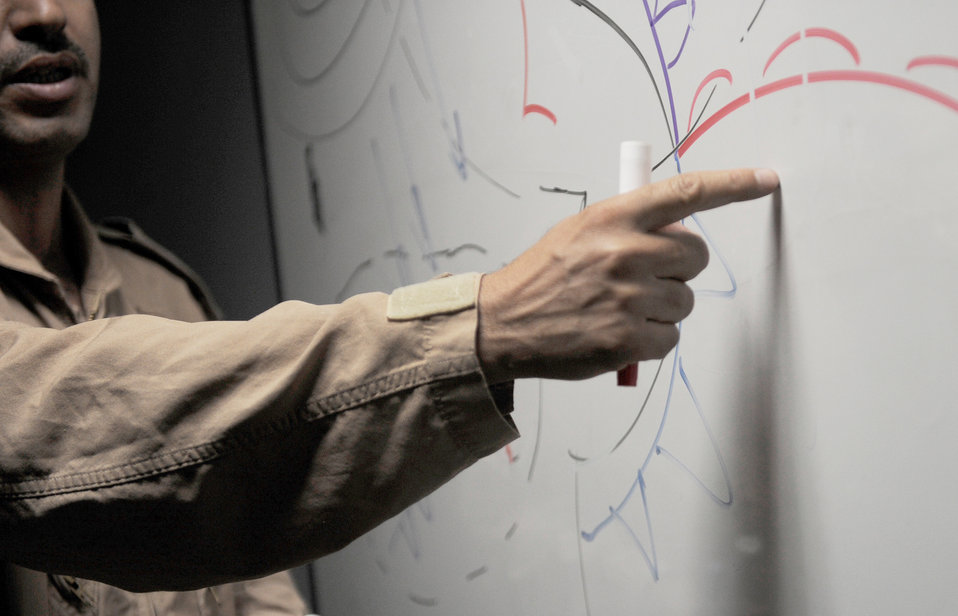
U.S. advisers help Iraqis kick off weather forecaster program

An Iraqi air force weather forecaster instructs cadets June 14, 2011, at the IqAF's weather center in Baghdad. Air Force weather advisers have been training the initial cadre of Iraqi air force weather forecasters over the past three years.